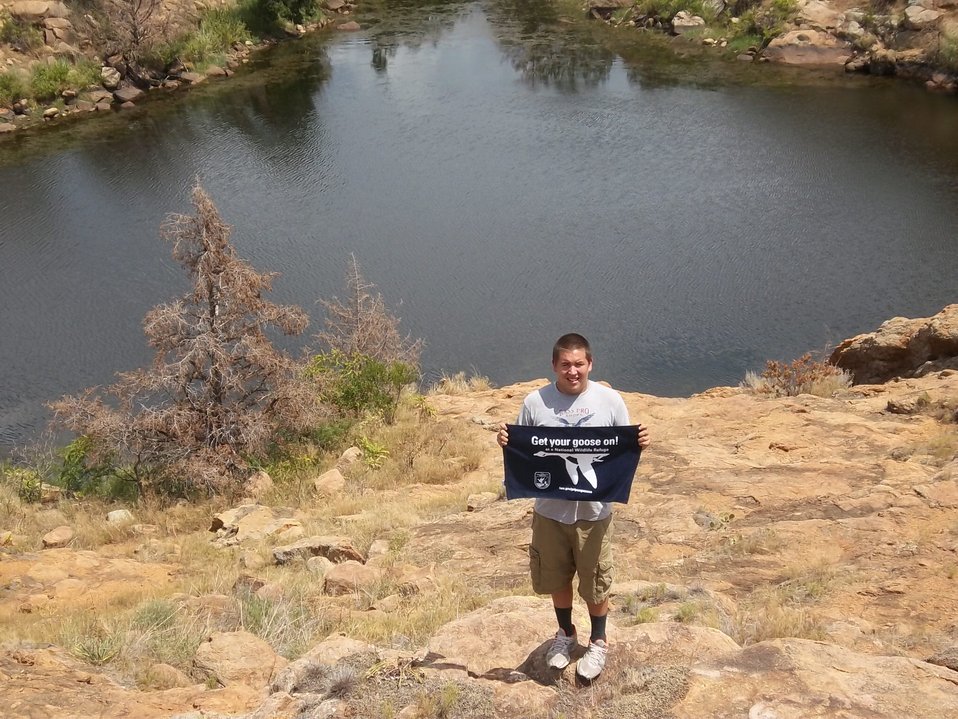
Get Your Goose On!

Wichita Mountains National Wildlife Refuge in Oklahoma.